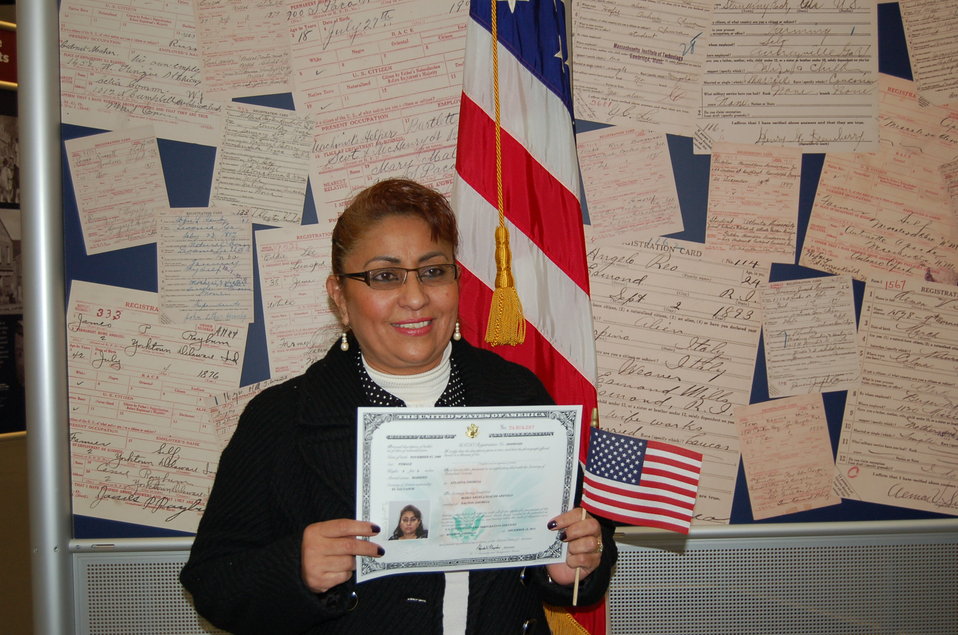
New Citizens